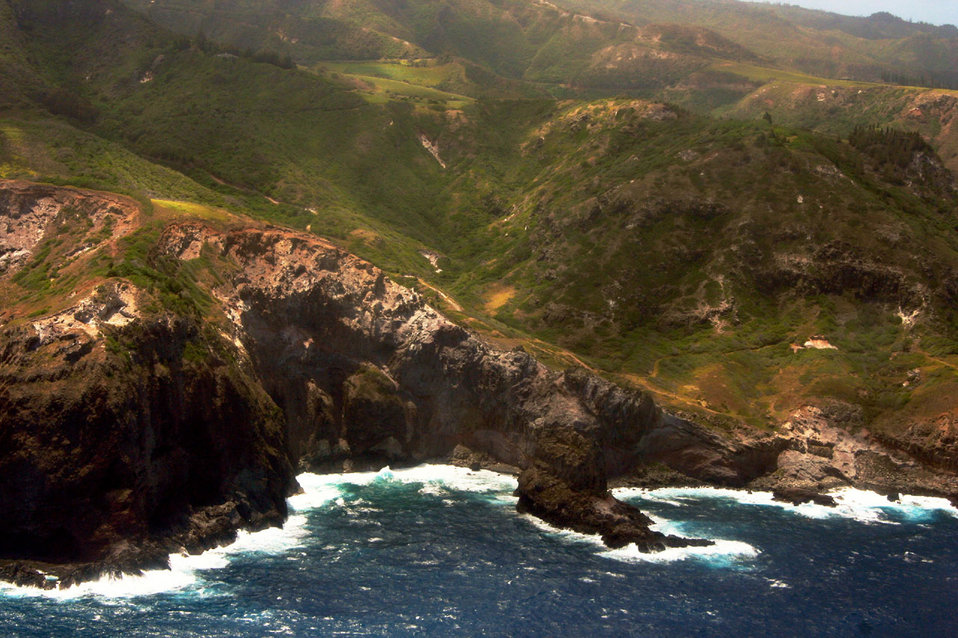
West coast of molokai

Photo of the western coast of molokai from helicopter.